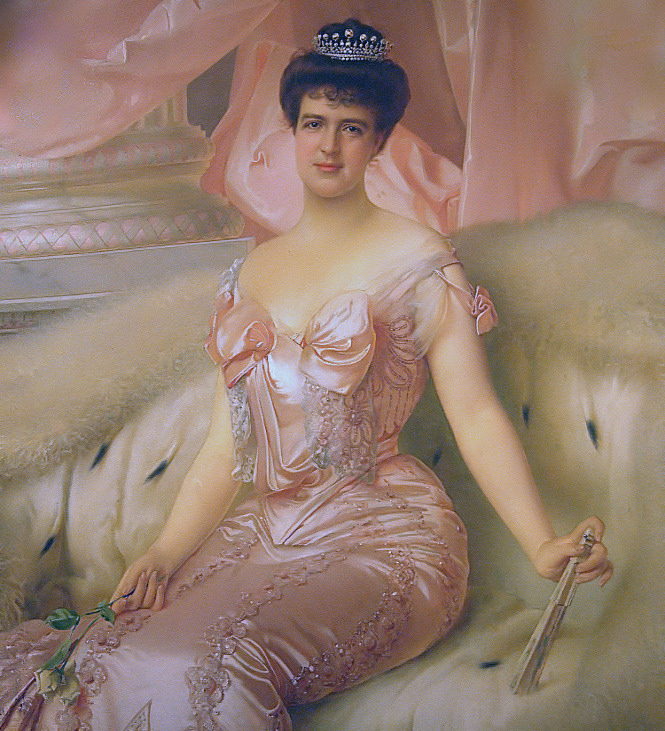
Amelie d'Orleans Corcos 1905